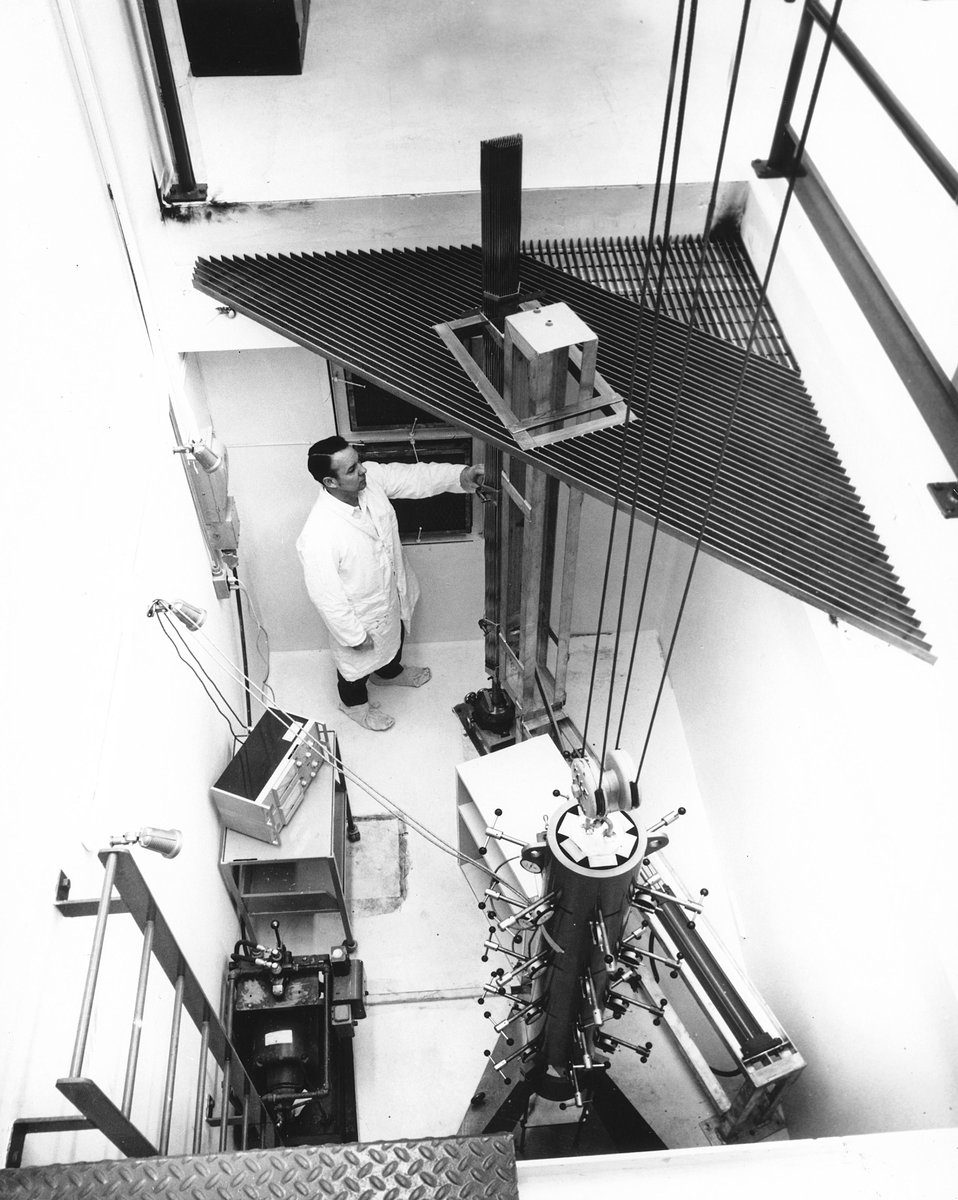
A WADCO technician fashions the sub-assemblies into a fuel bundle. c. 1971